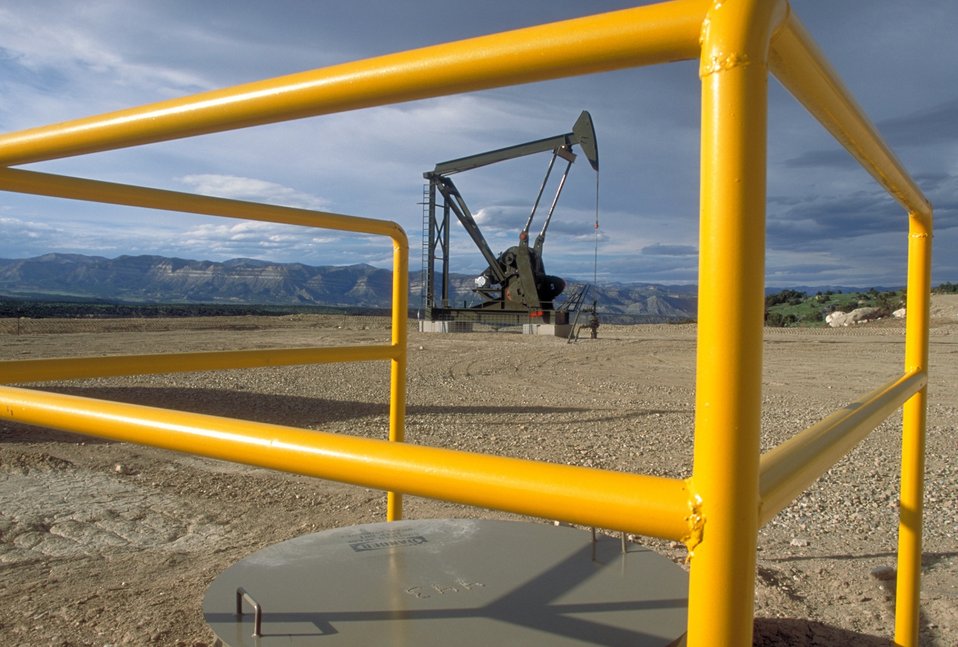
Pump unit producing coal bed methane near Price, Utah.